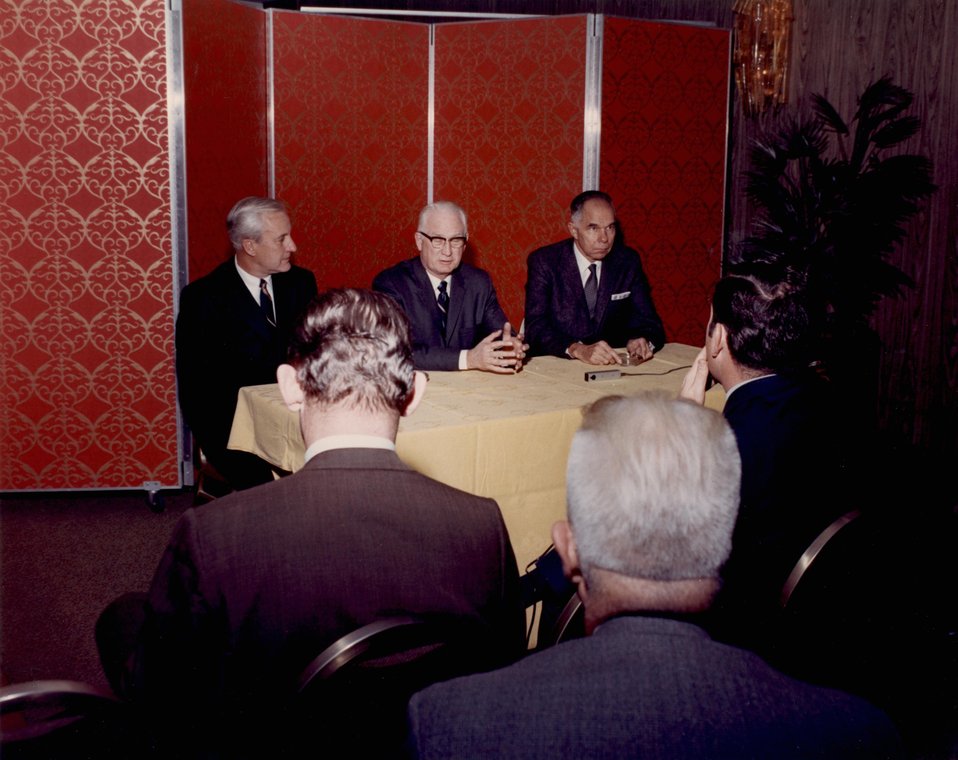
Fermi Award. Recipient: Walter Zinn. Date: Dec 2, 1970.